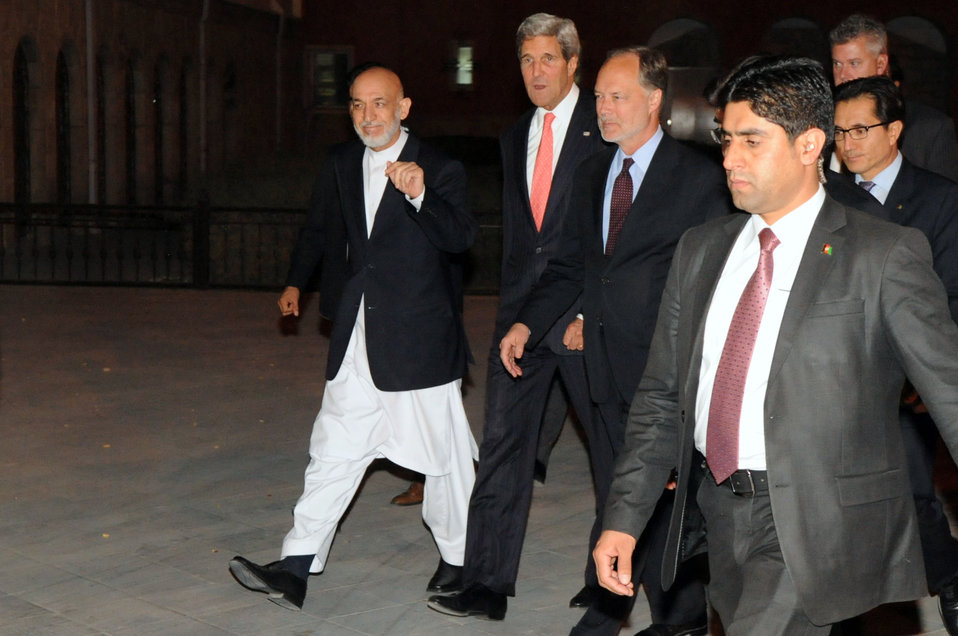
Secretary Kerry and Afghan President Karzai Head to a Working Dinner

U.S. Secretary of State John Kerry and Afghan President Hamid Karzai, accompanied by U.S. Ambassador to Afghanistan James Cunningham, head to a working dinner in Kabul, Afghanistan, on October 11, 2013.